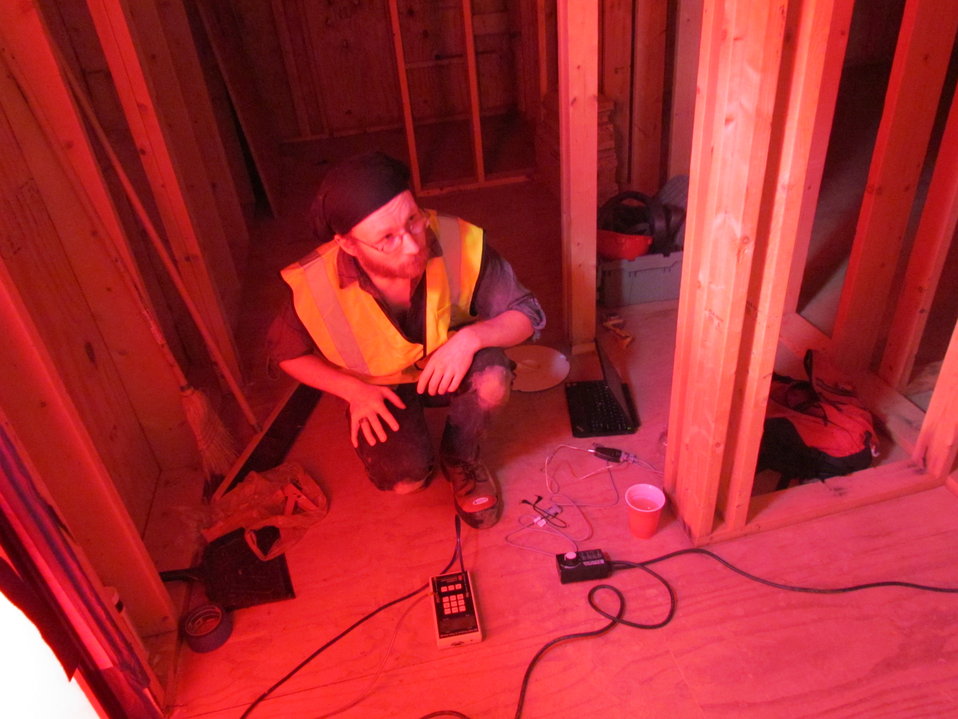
Net-Zero Energy Residential Test Facility - Daniel Bergey from Building Science Corporation conducting blower door test to measure air leakage rate of facility at current stage of construction.